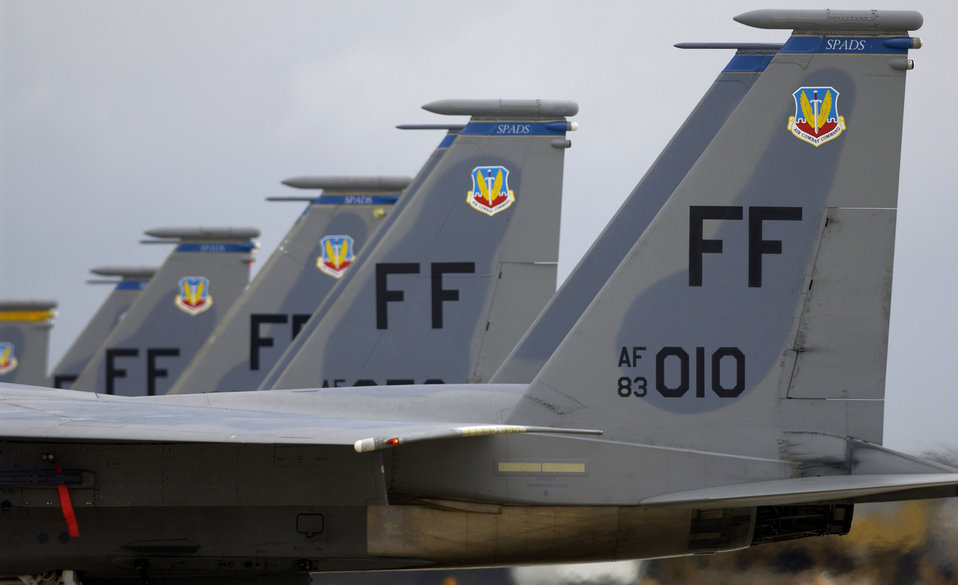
Eagle formation

LANGLEY AIR FORCE BASE, Va. - A formation of F-15 Eagle fighter aircraft line up on the flightline during a Phase 1 Operational Readiness Inspection here Aug. 12.